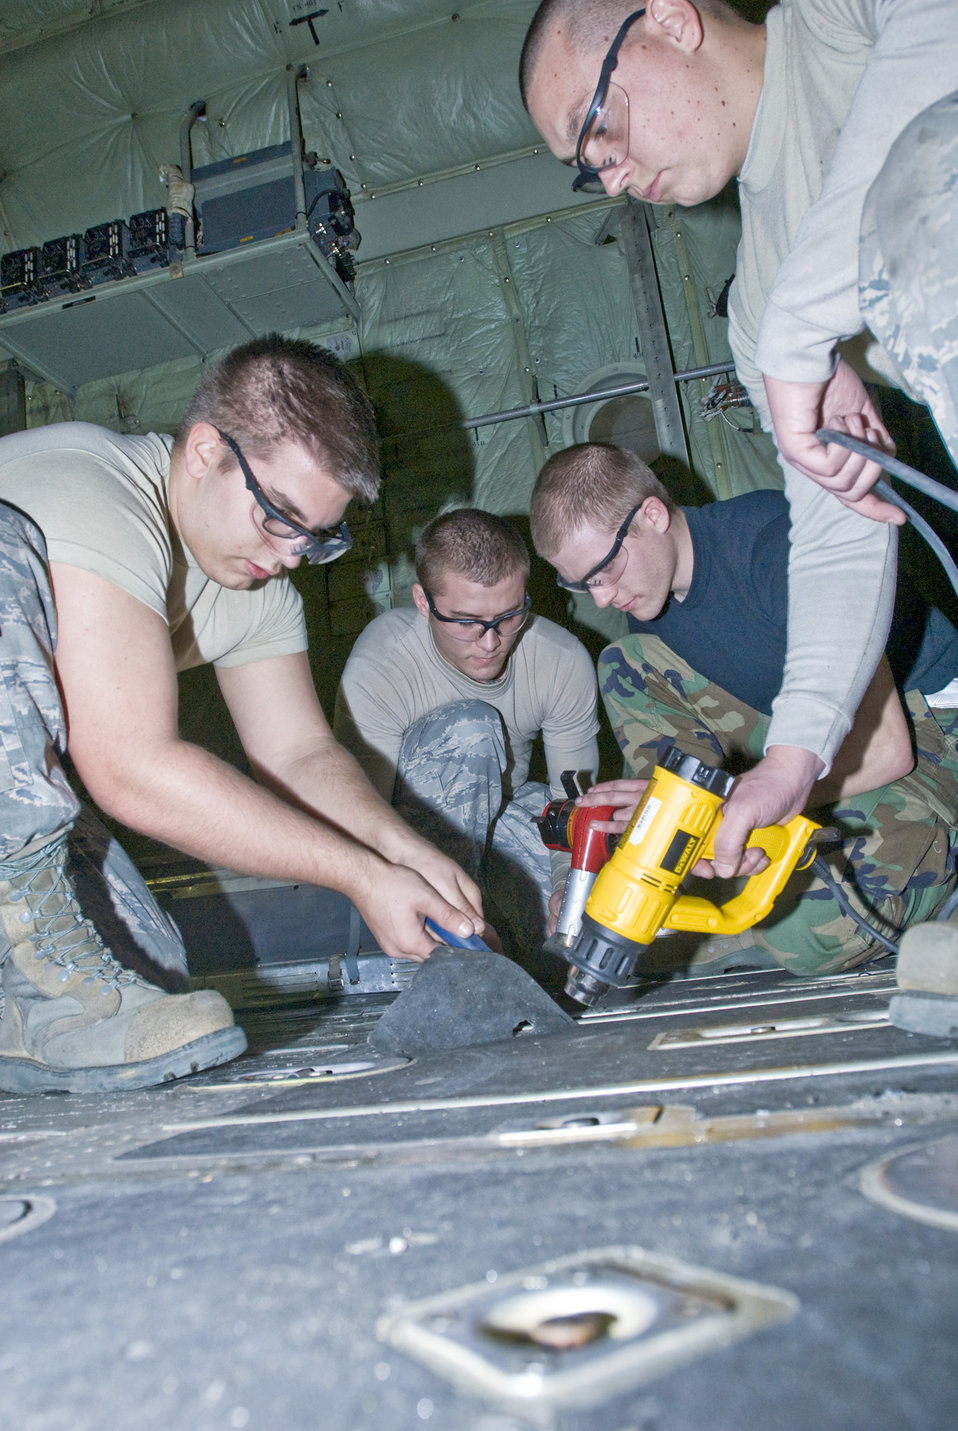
Refurb Crew

(From left) Airman 1st Class David Lee, Senior Airmen Eric McGarrh and Jason Heathington and Airman 1st Class Evan Owens work together to remove anti-skid tape from a C-130 Hercules? cargo floors Jan. 4, 2011, at Little Rock Air Force Base, Ark. The Air Force saves thousands of dollars by sending aircraft to be refurbished rather than sending them to depot. The Airmen are all 19th Equipment Maintenance Squadron members.